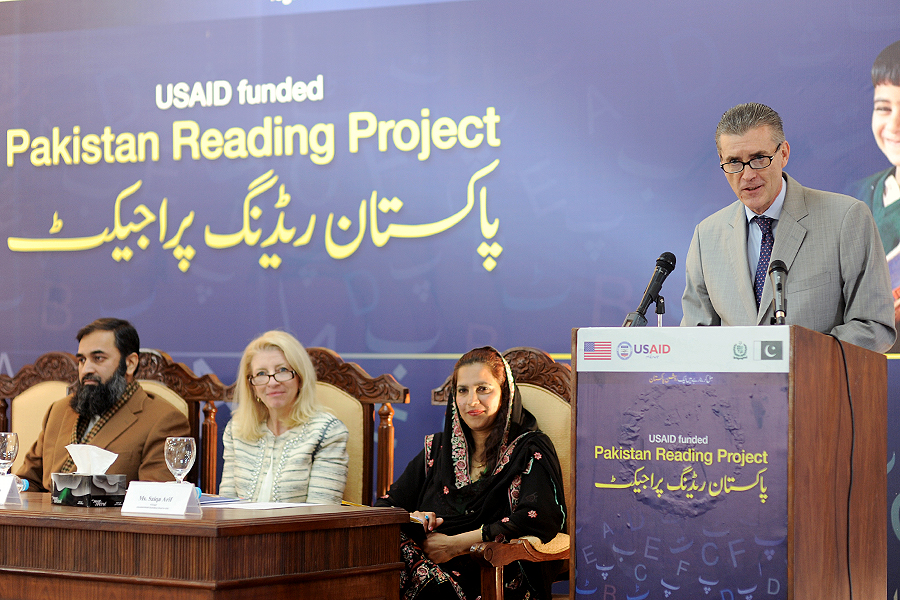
United States and Pakistan Launch the Pakistan Reading Project